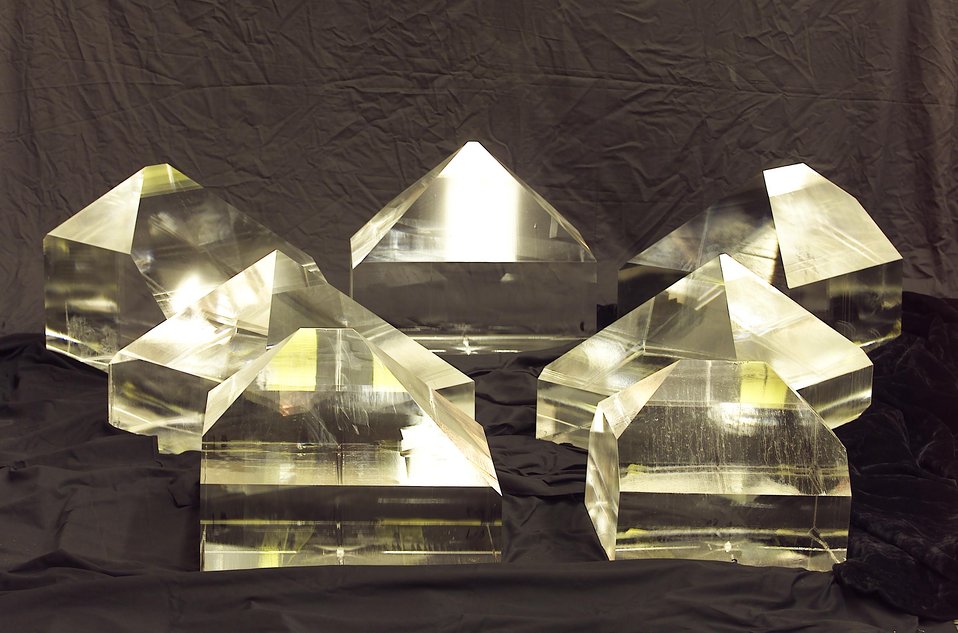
KDP crystals grown for the NIF.

The National Ignition Facility at LLNL enables key programs and technologies that support DOE's National Nuclear Security Administration Defense Programs and LLNL missions, ensuring that the national's weapons remain safe, secure and reliable. NIF, one of the cornerstones of DOE's stockpile stewardship program, will integrate the inertial confinement fusion program into the overall stockpile stewardship program and foster the development of associated laser technologies.